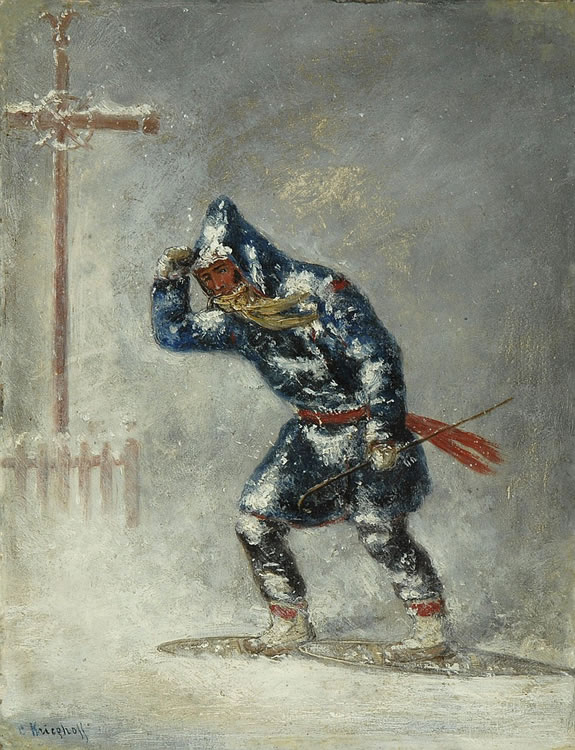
'Snowshoeing Home in a Blizzard', oil painting by Cornelius Krieghoff, 9 x 7 in.